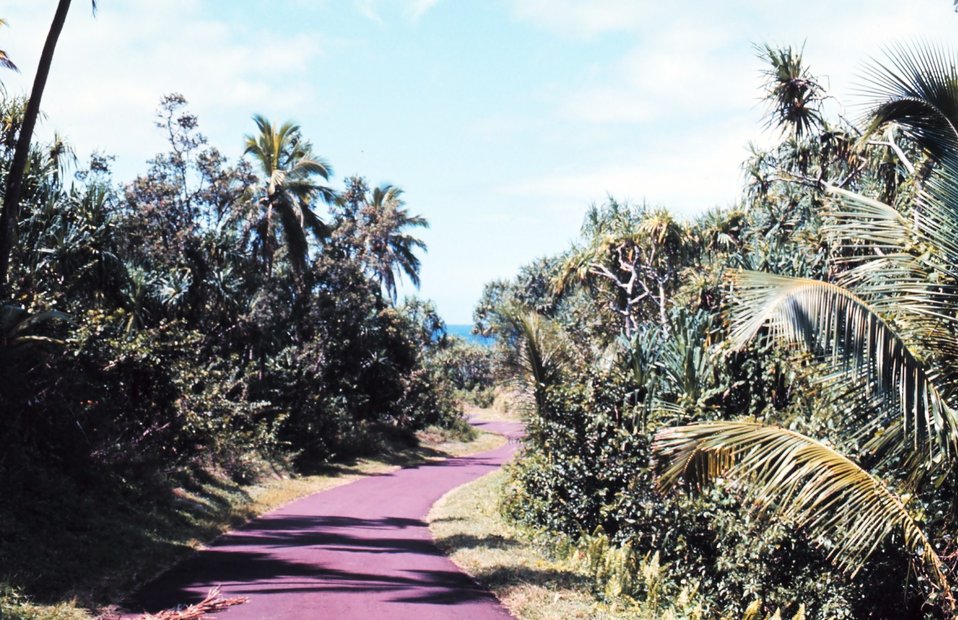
One-lane seaside road